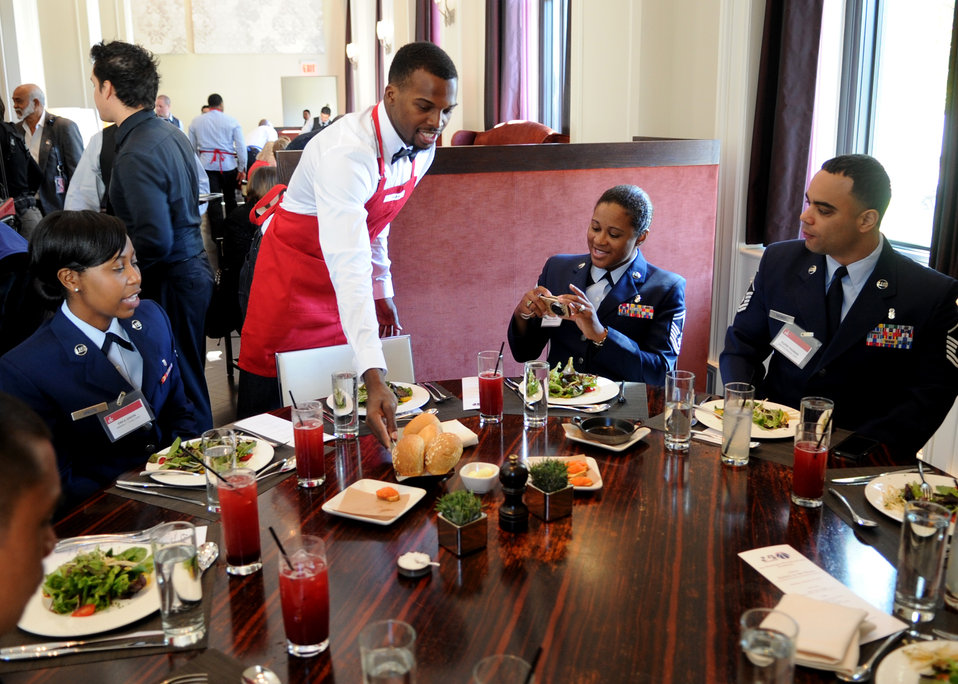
Wizards salute the military

Shelvin Mack, Washington Wizards point guard, serves Airmen from the 79th Medical Wing, Joint Base Andrews, Md., during the 3rd Annual Salute to the Stars luncheon at in Washington, D.C., Oct. 22, 2012. During the luncheon the service members and their families were served a complementary four course meal.